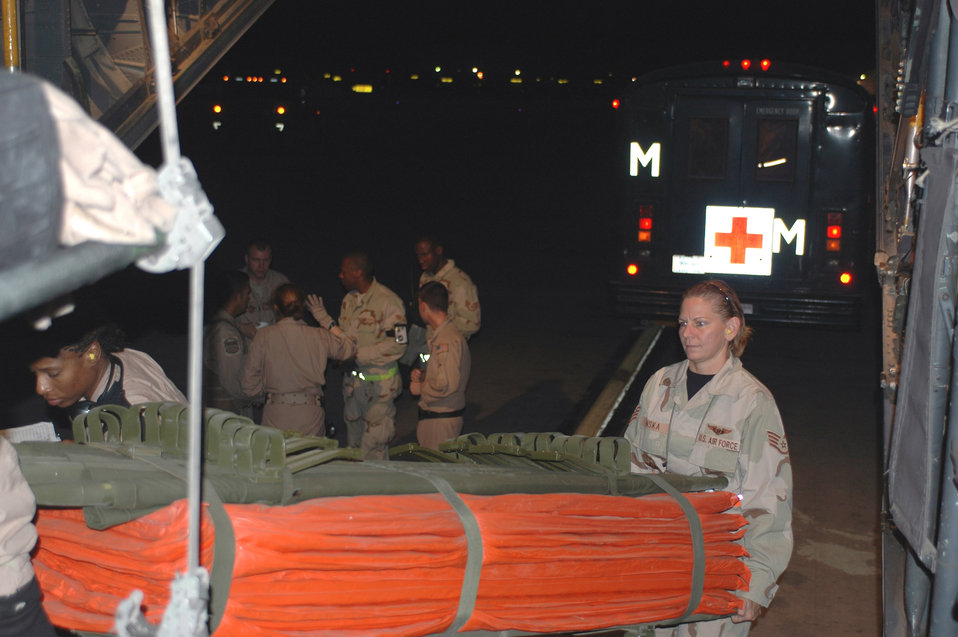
Aeromedical teams provide comfort, care in the air

Staff Sgt. Christine Penska (right) helps Staff Sgt. Christine Hall unload a litter to transport patients from the tarmac to the C-130 aircraft June 13 at Balad Air Base, Iraq. Patients were sent to a base in Southwest Asia for further care. Sergeant Penska is assigned to the 332nd Operations Support Squadron and Sergeant Hall is assigned to the 379th Expeditionary Aeromedical Evacuation Squadron.